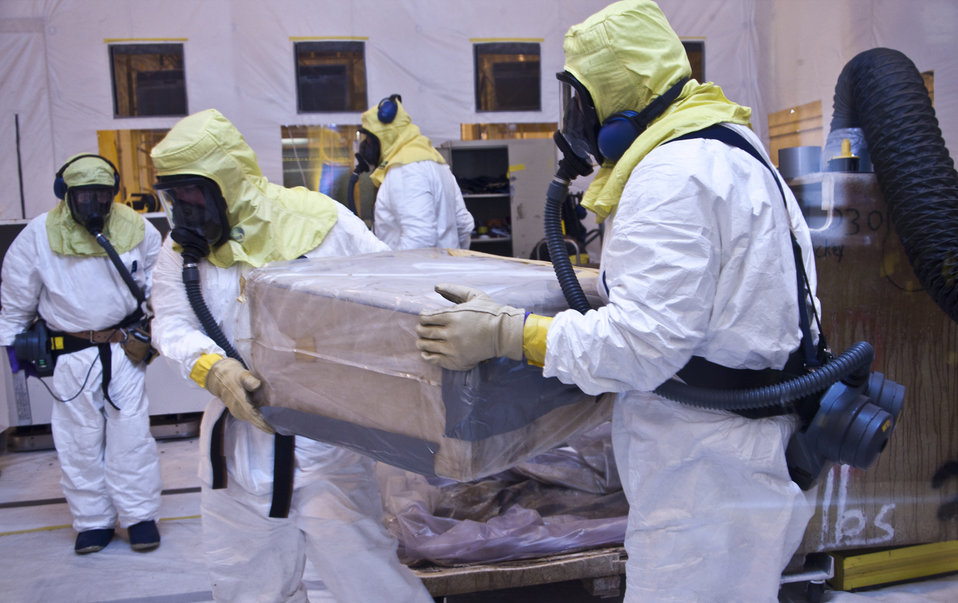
Los Alamos National Laboratory Ahead of Schedule Processing Waste in Large Boxes

Crews repackage waste from a fiberglass reinforced plywood box into a container that can be shipped to the Waste Isolation Pilot Plant.